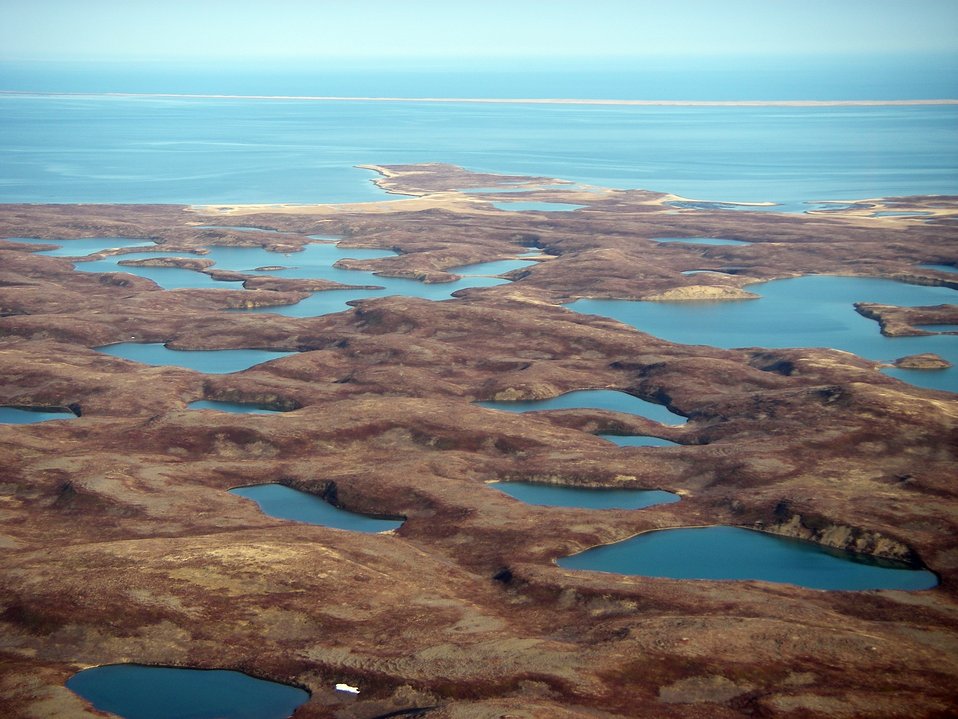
View to Blaine Point

Wilderness north of Kinzarof Lagoon, Izembek National Wildlife Refuge
Photo by Kristine Sowl,
USFWS, Public Domain